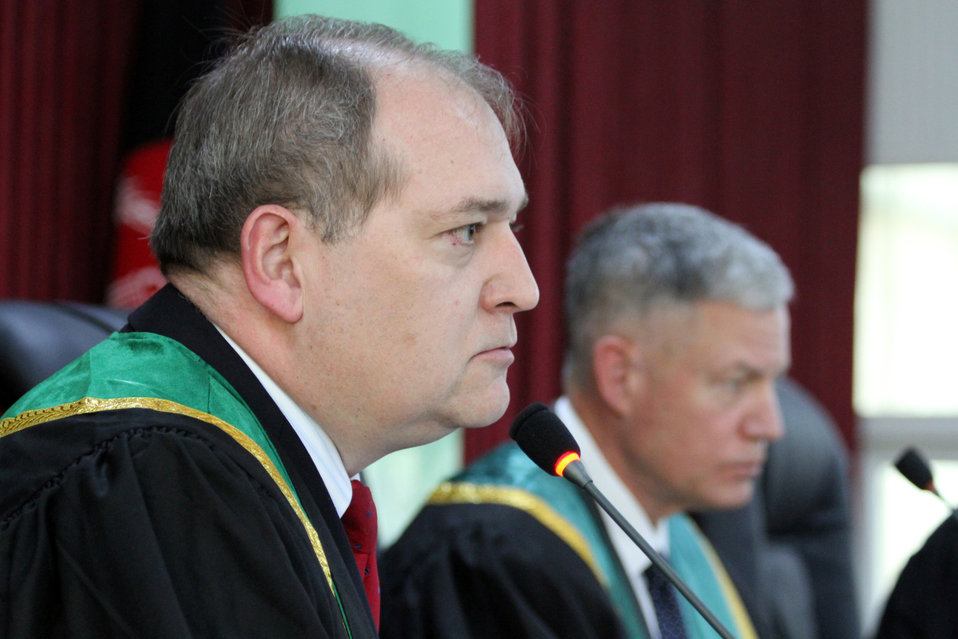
Afghanistan Final National Round of the 2013 Philip C.Jessup International Law Moot Court Competition